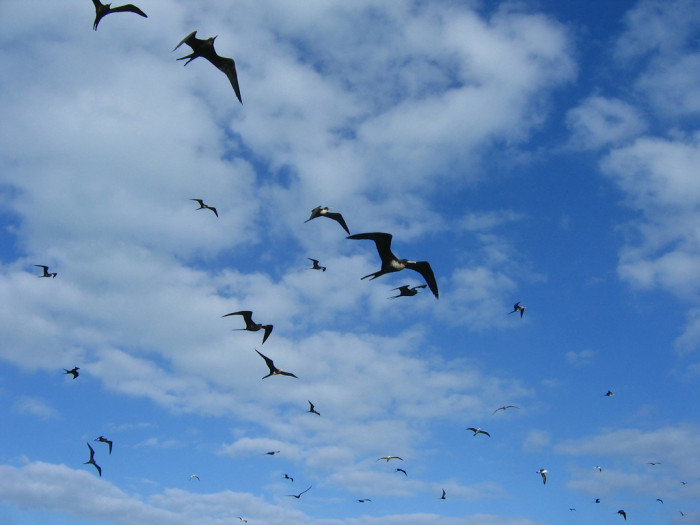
frigate birds

Midway Atoll National Wildlife Refuge, Pacific Islands
January 2007